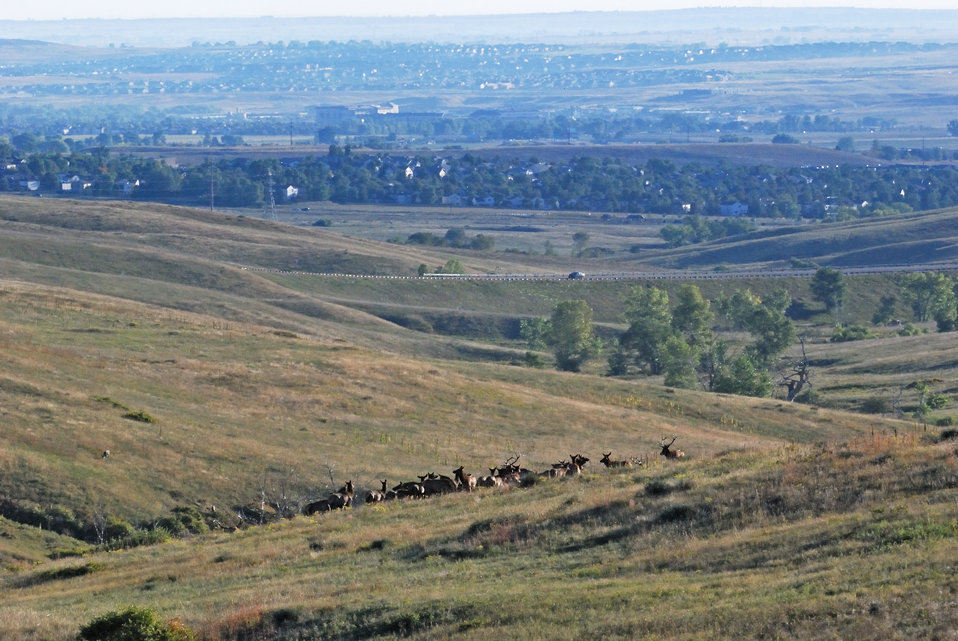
Rocky Flats site refuge

Elk at the Rocky Flats refuge.